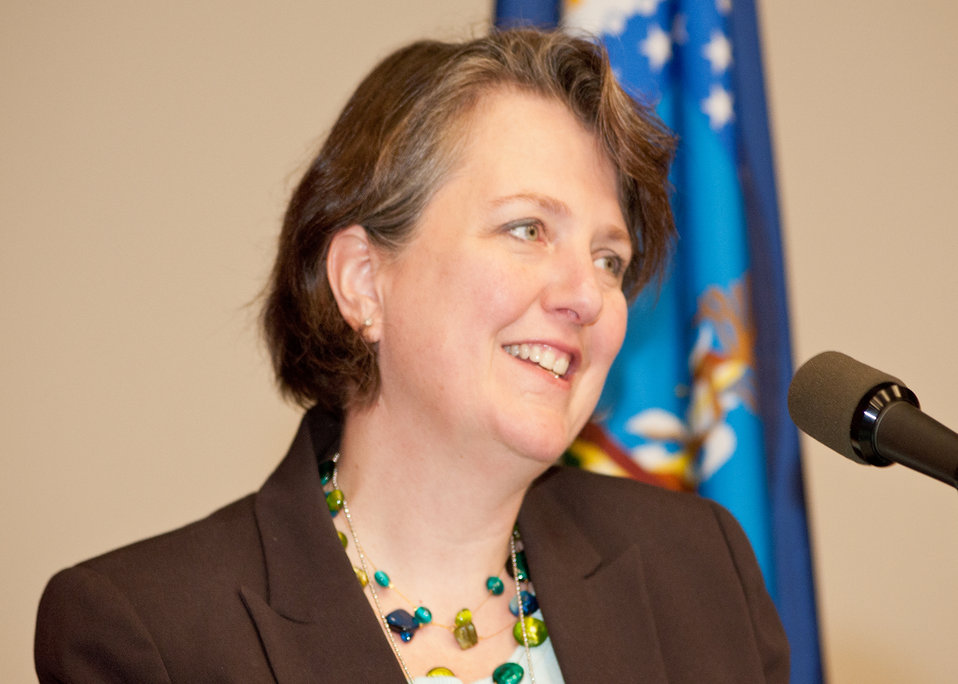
Deputy Agriculture Secretary Dr. Kathleen Merrigan, offers her congratulations to retiring employees and thanks to all employees for their public service and hard work during the Rural Development Celebration of Service held at the United States Department of Agriculture in Washington, DC, on Wednesday, November 16, 2011.